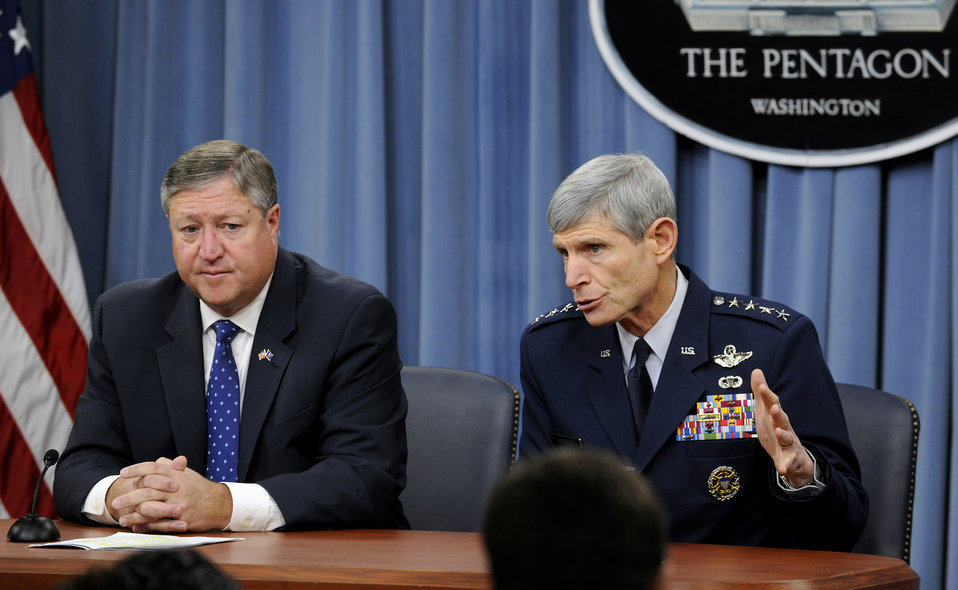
AF Force Structure Overview

Air Force Chief of Staff Gen. Norton Schwartz and Secretary of the Air Force Michael Donley answer questions about the Air Force's Force Structure overview during a Pentagon press briefing on Feb. 3, 2012.